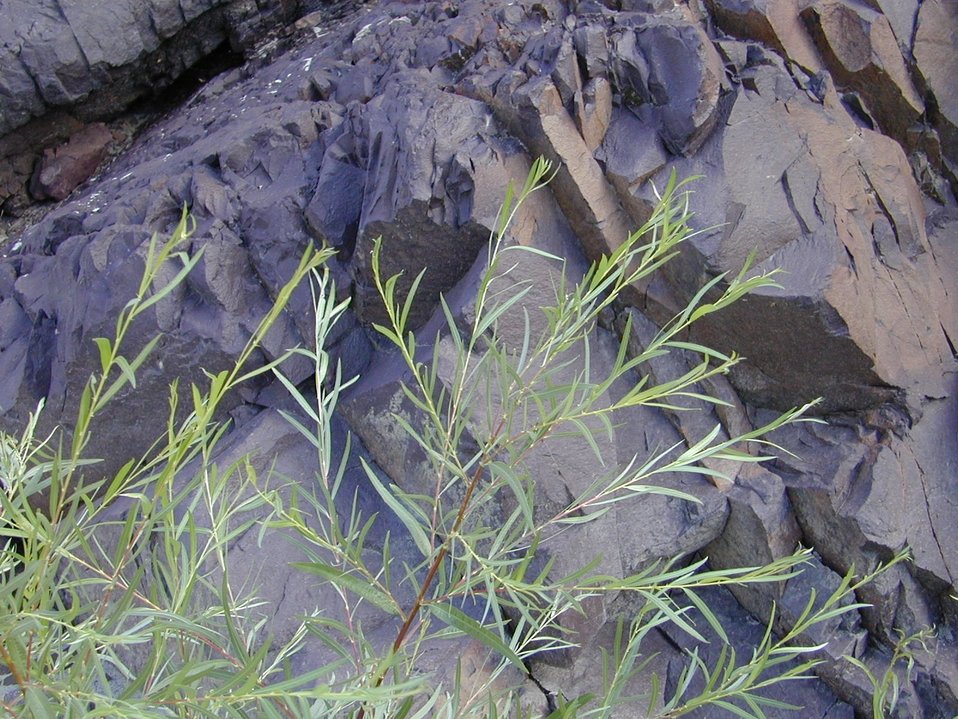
Rocks along the Lower Salmon River Cottonwood Field Office UCSC Upper Columbia Salmon Clearwater District